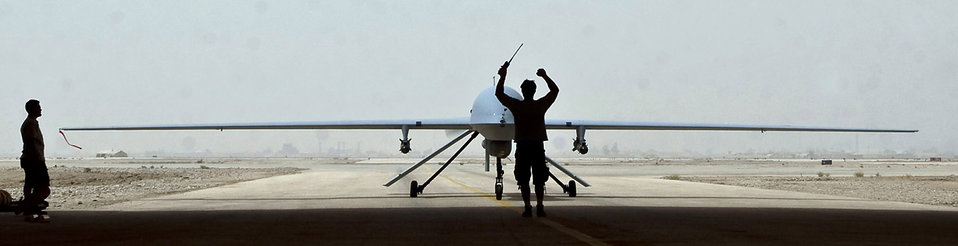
$1 headset fix improves Predator mission

An MQ-1B Predator aircraft taxies into a hangar here after a mission Aug. 1. A $1 headset modification made by Staff Sgt. Ray Stetler allows Predator pilots to use Voice Over Secure Internet Protocol communications through their headsets. Sergeant Stetler is the NCO in charge of base information and infrastructure for the 407th Expeditionary Communications Squadron at Ali Base, Iraq.